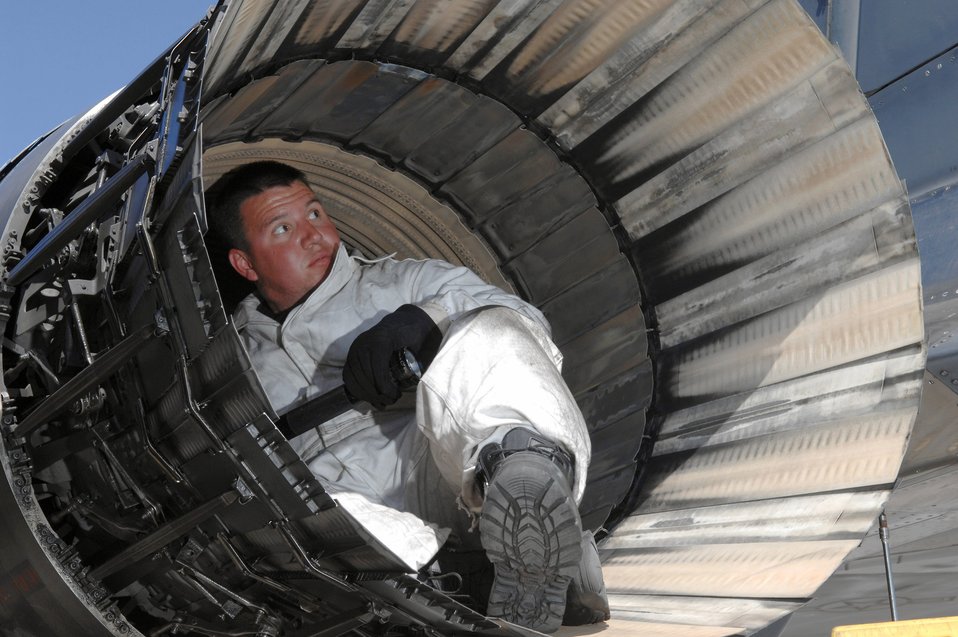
A tight squeeze

Staff Sgt. Charles Sparks inspects the exhaust of an F-15E Strike Eagle April 9 at Nellis Air Force Base, Nev. He is with the 391st Aircraft Maintenance Unit at Mountain Home AFB, Idaho, which goes to Nellis AFB every two years to provide advisory support aircrew training.